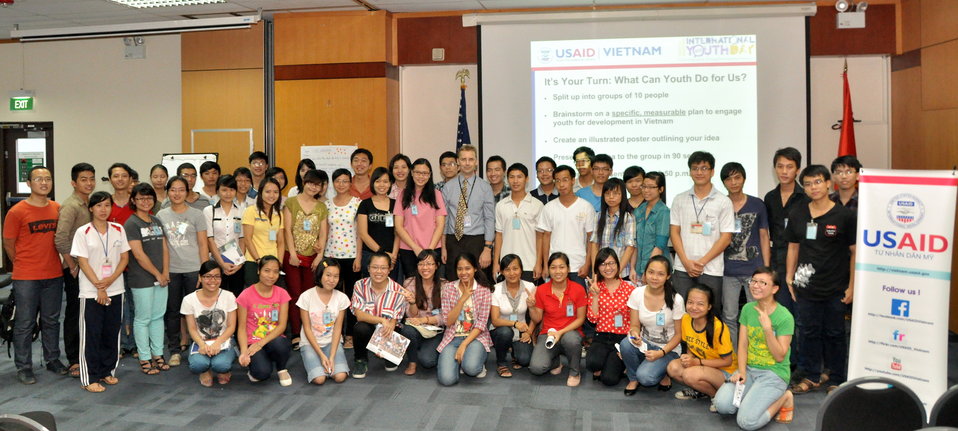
International Youth Day 2013: USAID hosts a lively discussion and group exercise on how youth can join in to advance development

Hanoi, August 12, 2013.